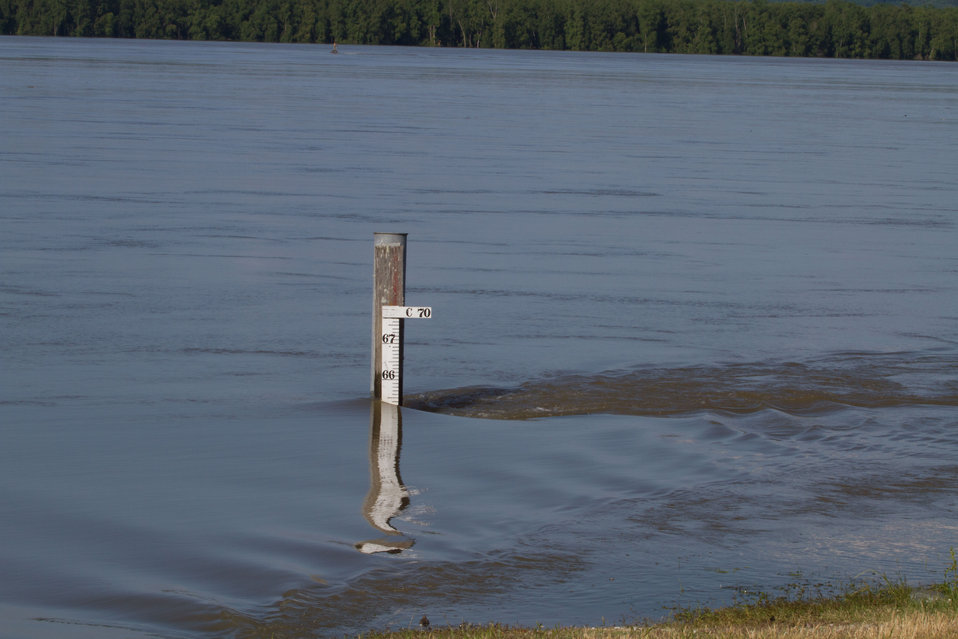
The Army Corps of Engineers conduct daily depth measurements along the intake side of The Old River Control Complex, Low Sill Structure in Concordia Parish, LA, on Tuesday, May 17, 2011. The measurements tell both the condition along the intake “ramp” and allow them to calculate the flow through the gates. The Old River Control Complex is designed to channel as much as 30 percent of the Mississippi River’s flow into the Gulf of Mexico through it’s eleven 44-foot wide gates across 566 foot span that separates the Mississippi and (the outflow channel to the) Red and Atchafalaya Rivers. Rated at 300,000 million gallons per minute (note: That’s more than seven Olympic sized swimming pools every second). Although this helps the Mississippi River, it (along with other concerns, puts back pressure on the Red River and other waterways, possibly causing some flooding of farms to avoid a catastrophic breech of the levee system. Most of the gates have been opened by a rolling crane and stored in racks. Debris, some as larger than telephone polls make their way through the gates and pool in eddies. The constant motion and contact with other objects, strip trees of their branches and bark. 20-30 pound Carp can frequently be seen jumping out of the white water.